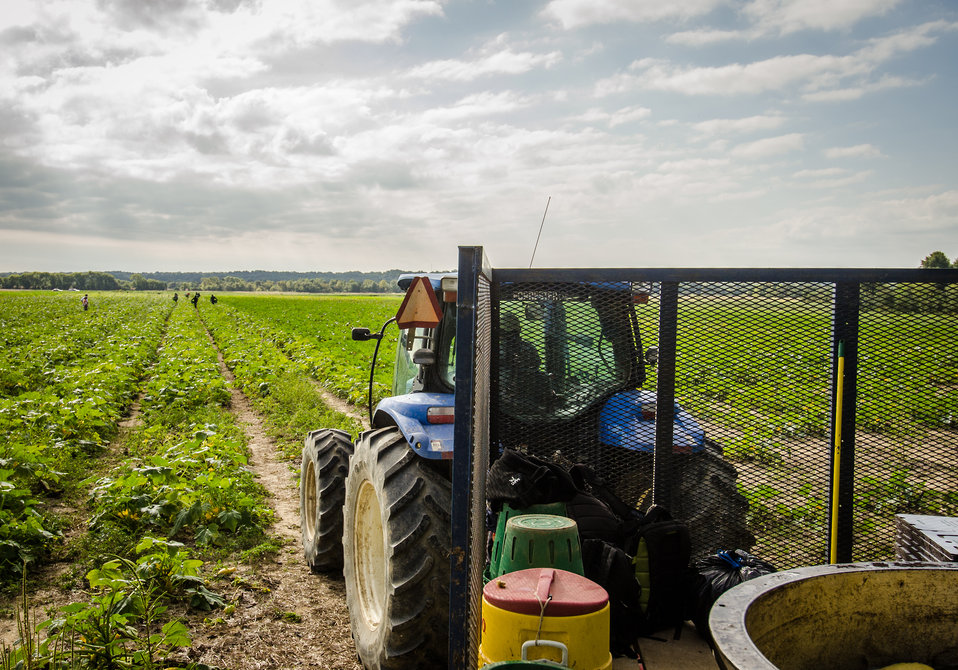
Migrant workers pick yellow squash, while a tractor pulls a processing trailer with a rinse tub and new boxes for the squash at Kirby Farms in Mechanicsville, VA on Sep. 20, 2013. Kirby Farms is a third-generation family farm that covers 500 acres, and generates produce and grains on a year-around operation.